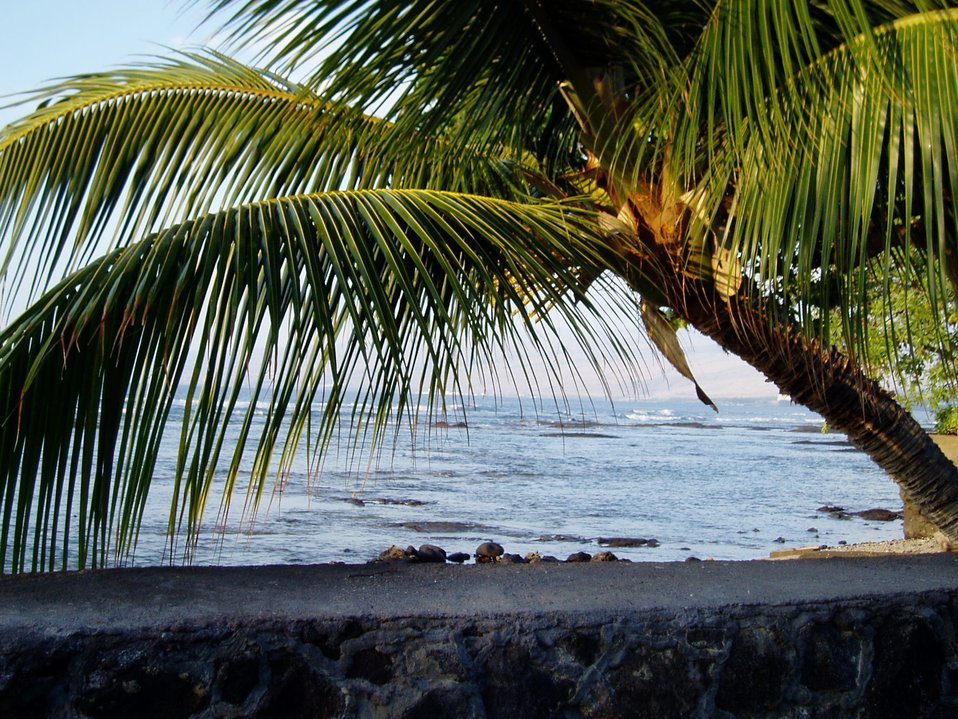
Palm fronds at the City of Refuge frame a view of coastal waters.